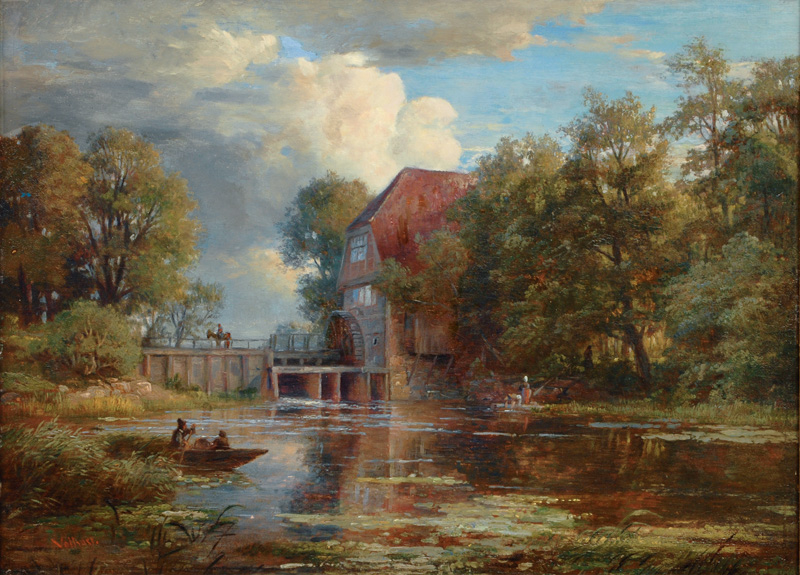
AF Vollmer - An der Wohldorfer Mühle